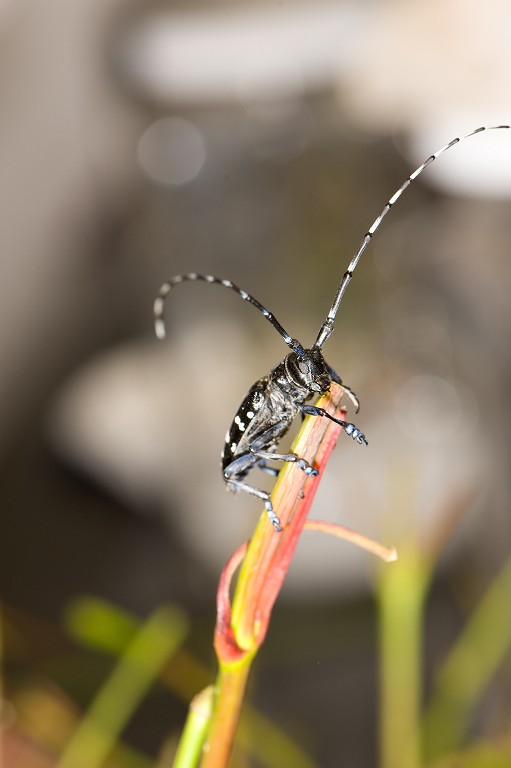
ALB image Blog

An Asian Longhorned Beetle (ALB) perches on a branch. August is “Tree Check Month' when adult ALB like this one can be easily spotted on or around hardwood trees. The ALB is an invasive species that has destroyed thousands of trees throughout the U.S. The U.S. Department of Agriculture’s (USDA) Animal and Plant Health Inspection Service (APHIS), the U.S. Forest Service, the Nature Conservancy, and American Forests held a joint news conference at the National Press Club on July 29, 2013 to urge the public to report signs of the invasive pest that threatens recreational areas, forests, and suburban and urban shade trees. These agencies have named August “Tree Check Month” in order to encourage the public to examine their trees for signs of ALB.